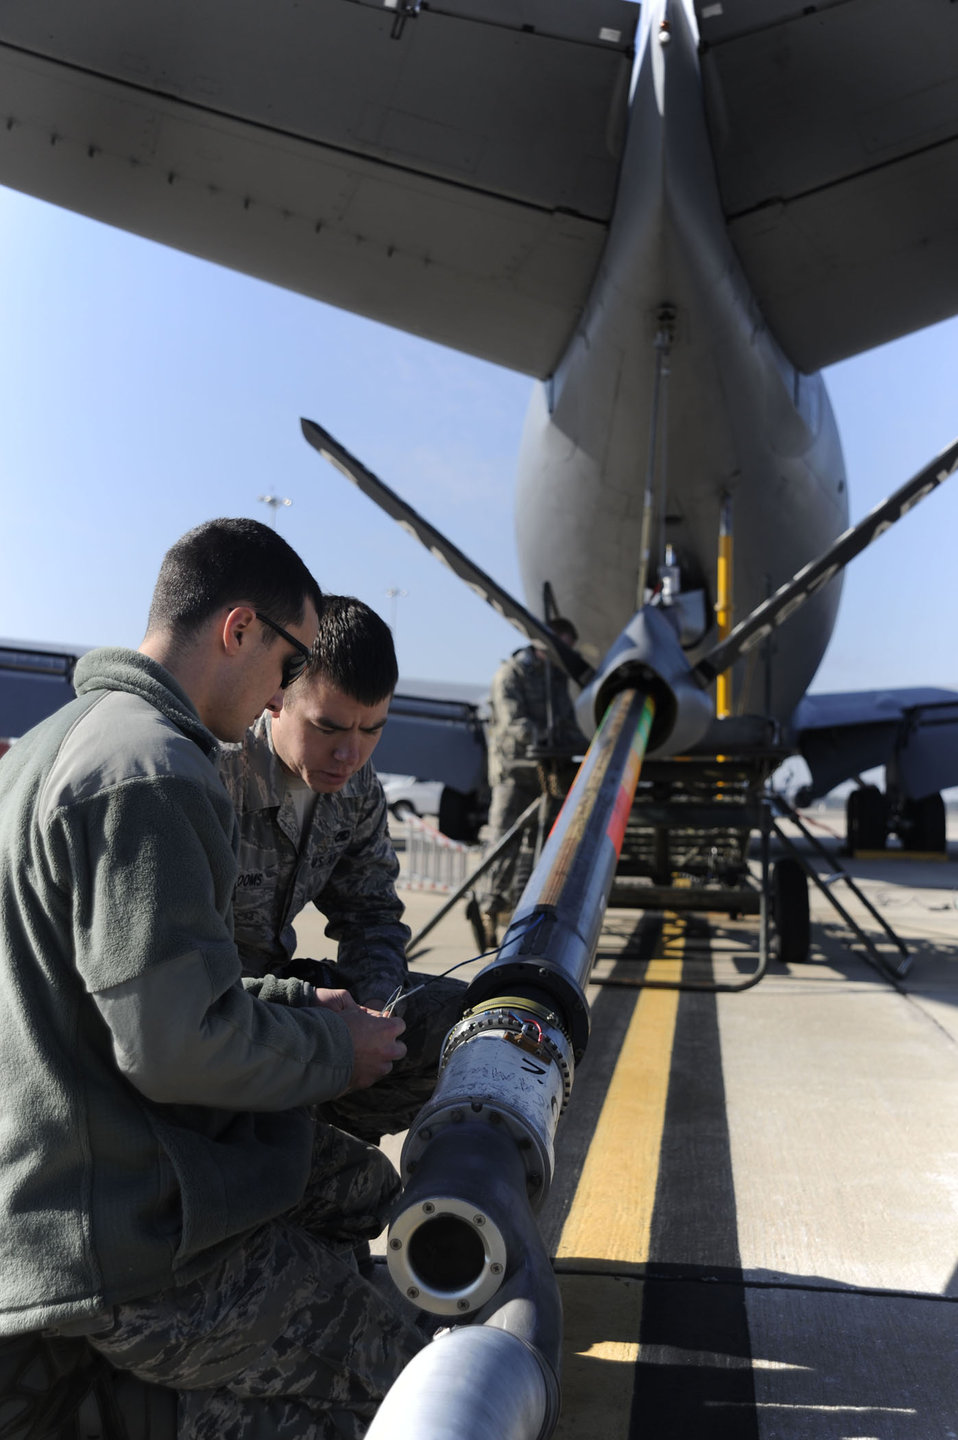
Wired for success

Senior Airman Jarod Jarrell (left) and Airman 1st Class Curtis Booms repair the boom signal coil wiring on a KC-135 Stratotanker Feb. 9, 2011, at MacDill Air Force Base, Fla. Airmen Jarrell and Booms are electrical and environmental systems technicians assigned to the 6th Aircraft Maintenance Squadron.